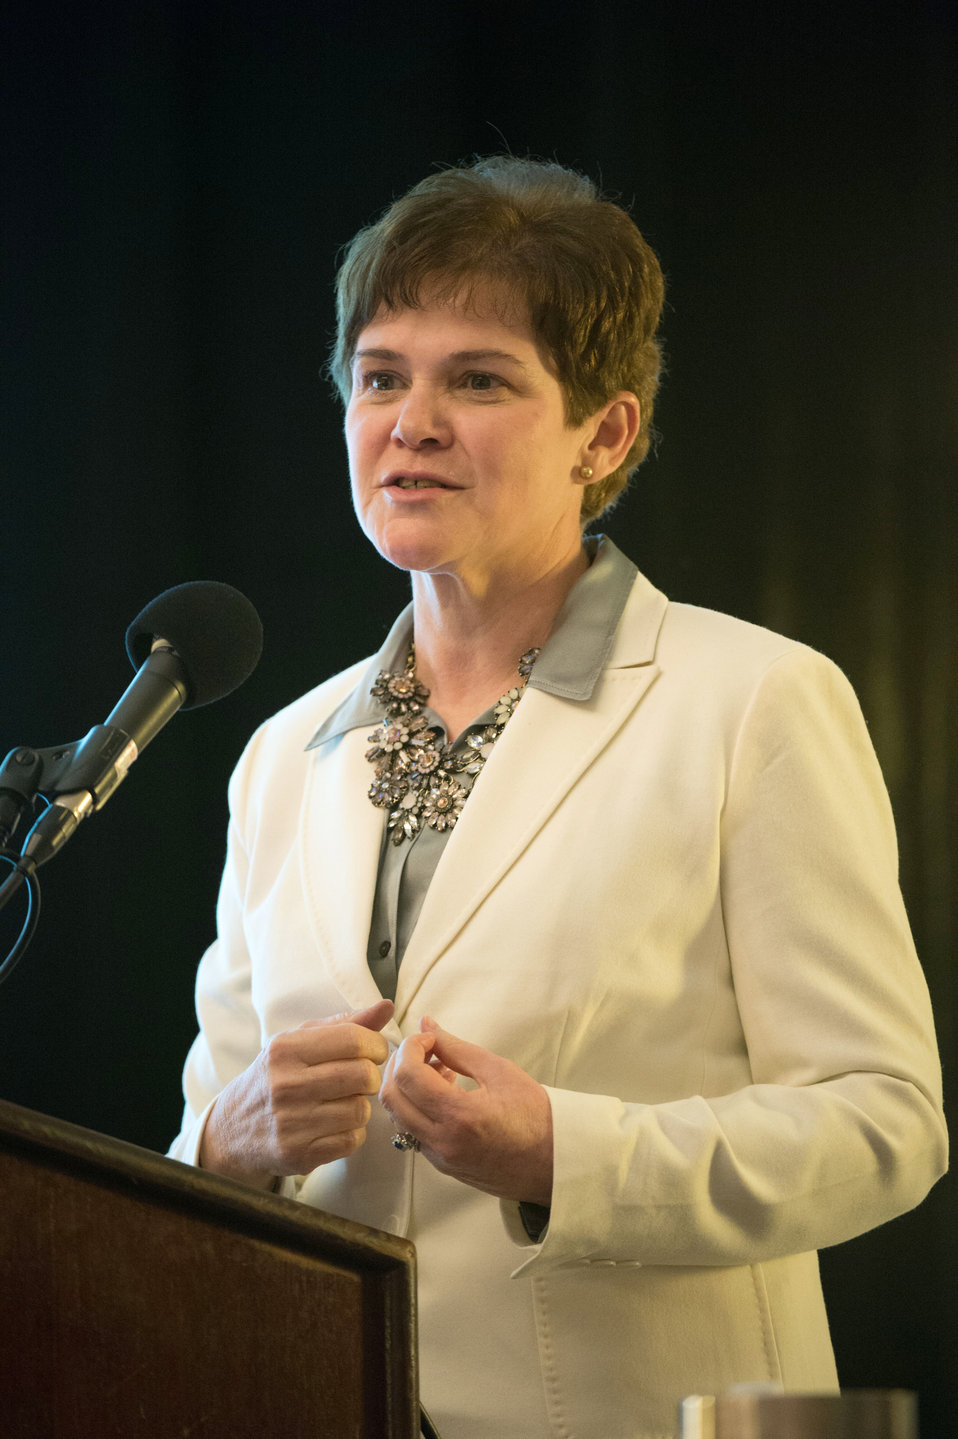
Agriculture Deputy Secretary Krysta Harden moderates a special session on A Roadmap for Women in Agriculture at the 2014 Agricultural Outlook Forum in Arlington, VA on Thursday, Feb. 20, 2014. Panelists spoke about the variety of career choices they had taken as well as how they have shaped their future in the face of opportunities and challenges. The panelists discussed their views on the importance of impacting agricultural policy, removing barriers for women, and collaborations. The U.S. Department of Agriculture's (USDA) annual Agricultural Outlook Forum brings together the agricultural community to discuss policy, trade, science, rural development, and the economic outlook for the coming year. The Forum also focuses on forestry, health and nutrition issues, and the changing dynamics and face of rural America.